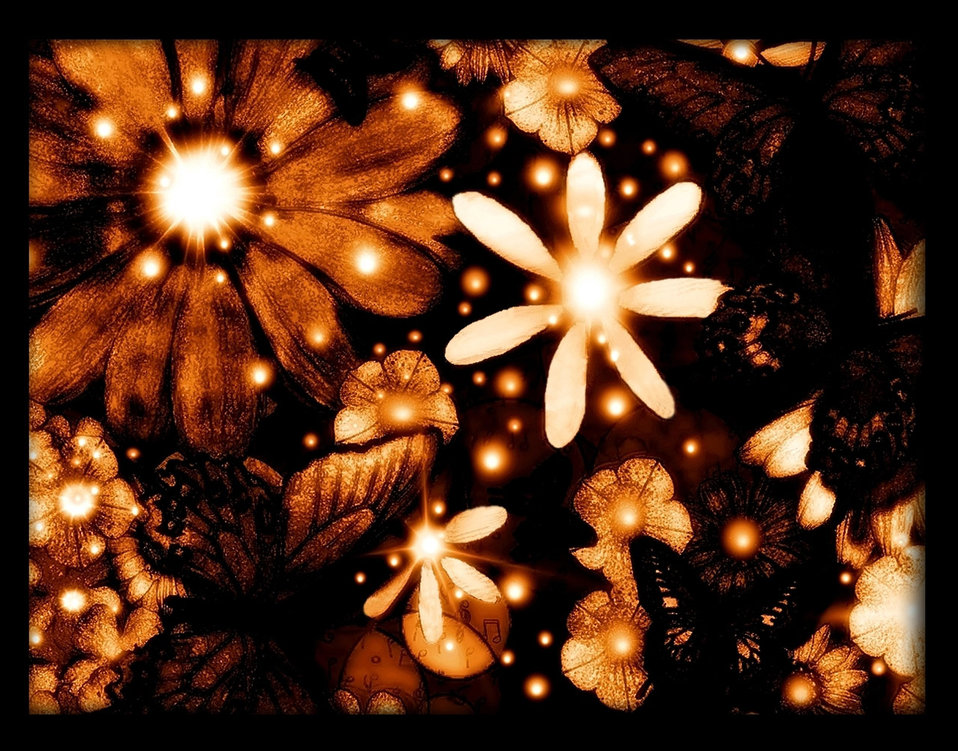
Summer evening

Nature in the evening.